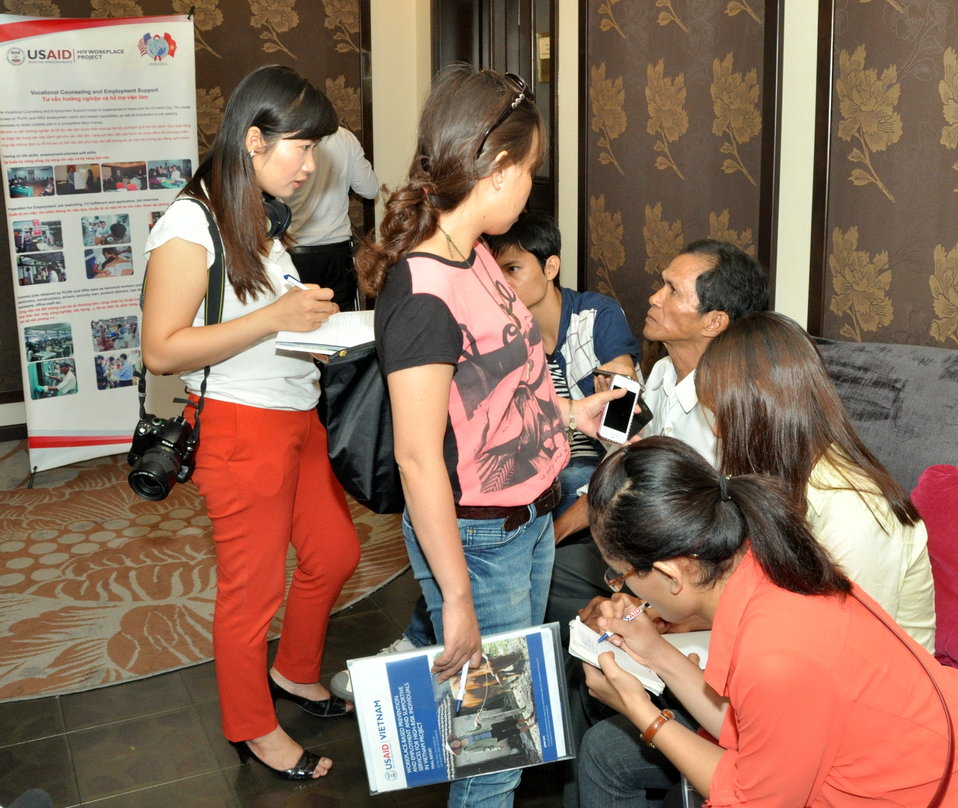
A beneficiary of USAID HIV Workplace Project talk to reporters on the sidelines of the event.

Hanoi, June 20, 2013.